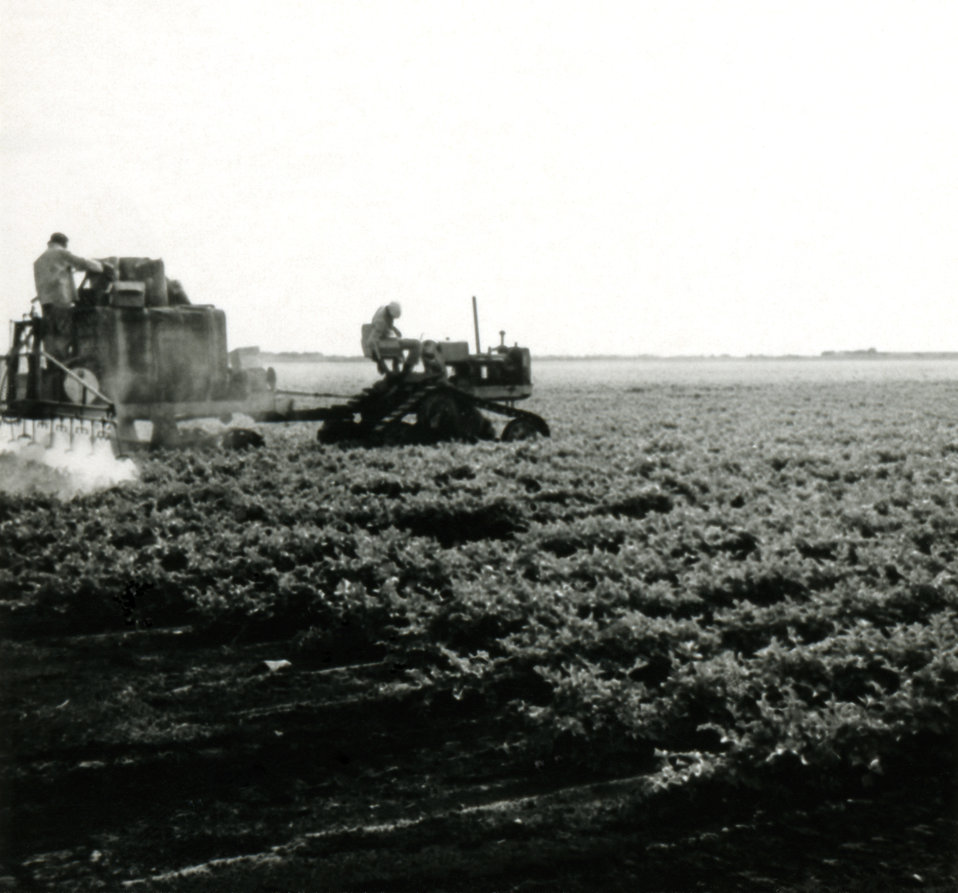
This 1950s historical photograph was provided by the Center for Disease Control's (CDC), National Institute for Occupational Safety and Health (NIOSH), and it depicted agricultural workers who were applying pesticides with a tractor-pulled pesticide-dispersal machine. The image highlighted the potential for these workers to be exposed to airborne chemical pesticides. This realworld scenario emphasized the need for a regulating body, which would mandate business owners to adhere to protocols that made the workplace a safe environment in all forms of commerce.